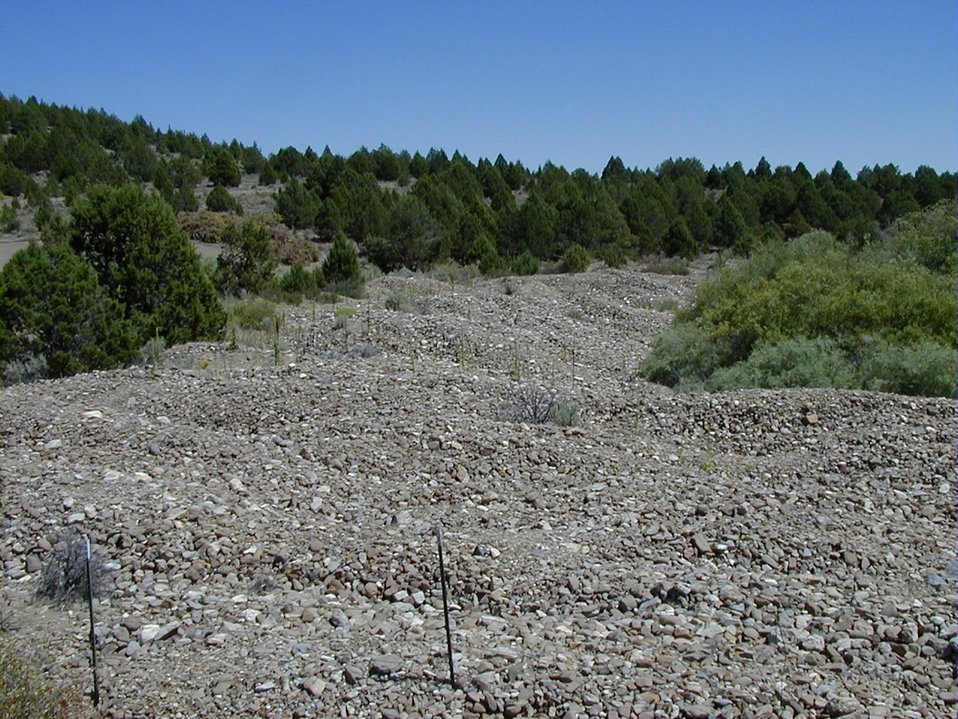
Bridge Creek, dredge placer tailings Owyhees Lower Snake River District